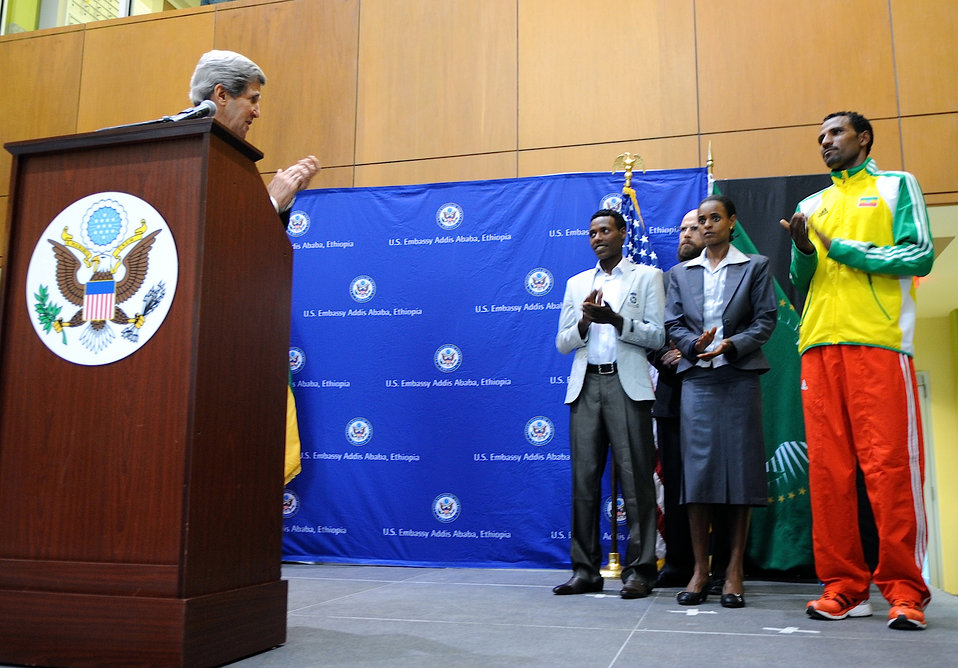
Secretary Kerry Applauds Boston Marathon Winner Lelisa Desisa

U.S. Secretary of State John Kerry applauds Boston Marathon winner Lelisa Desisa for his decision to return his medal in honor of the marathon bombing victims, during a ceremony at the U.S. Embassy in Addis Ababa, Ethiopia, on May 26, 2013.